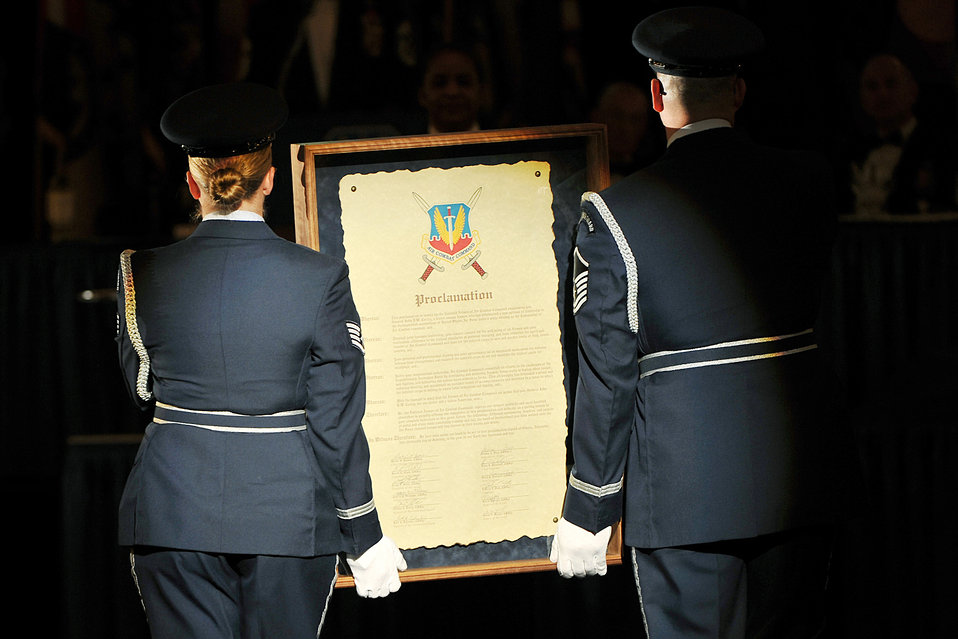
Order of the Sword

Base honor guard members carry a proclamation scroll during the Air Combat Command Order of the Sword ceremony Jan. 13, 2010, in Omaha, Neb. The proclamation declared retired Gen. John D.W. Corley, the former Air Combat Command commander, ?a leader among Airmen.?

U.S. Air Force Photo by/Charles Haymond
[CLEARED] by Deborah Aragon